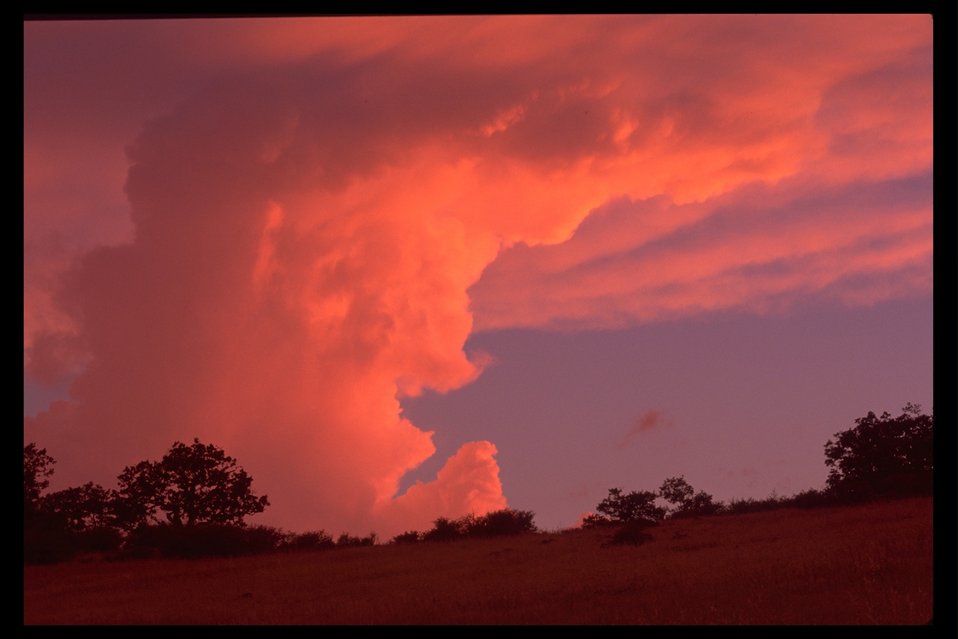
Thunderhead cloud over Roxy Anne Peak near Medford.